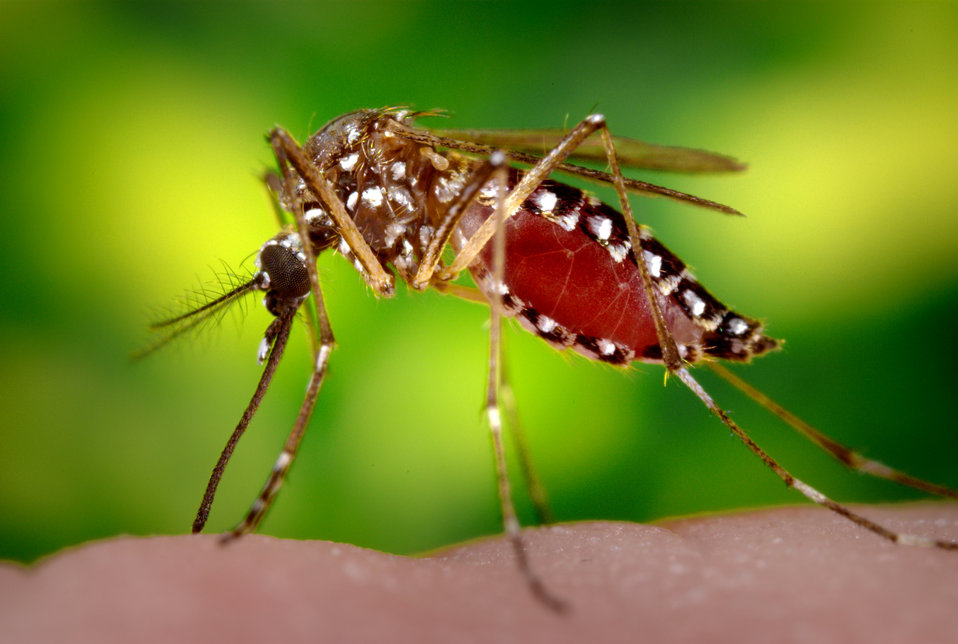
Mosquito feeding

This 2006 image depicted a female Aedes aegypti mosquito as she was completing the activity of obtaining a blood-meal from a human host through her fascicle, which she'd begun to resheath in her labium. Both structures are part of her feeding organ known as the proboscis. In this case, what would normally be an unsuspecting host was actually the CDC's biomedical photographer's own hand, which he'd offered to the hungry mosquito so that she'd alight, and be photographed while feeding. After it filled with blood, the abdomen became distended, stretching the exterior exoskeletal surface, thereby, causing it to become transparent, allowing the collecting blood to become visible as an enlarging intra-abdominal red mass.